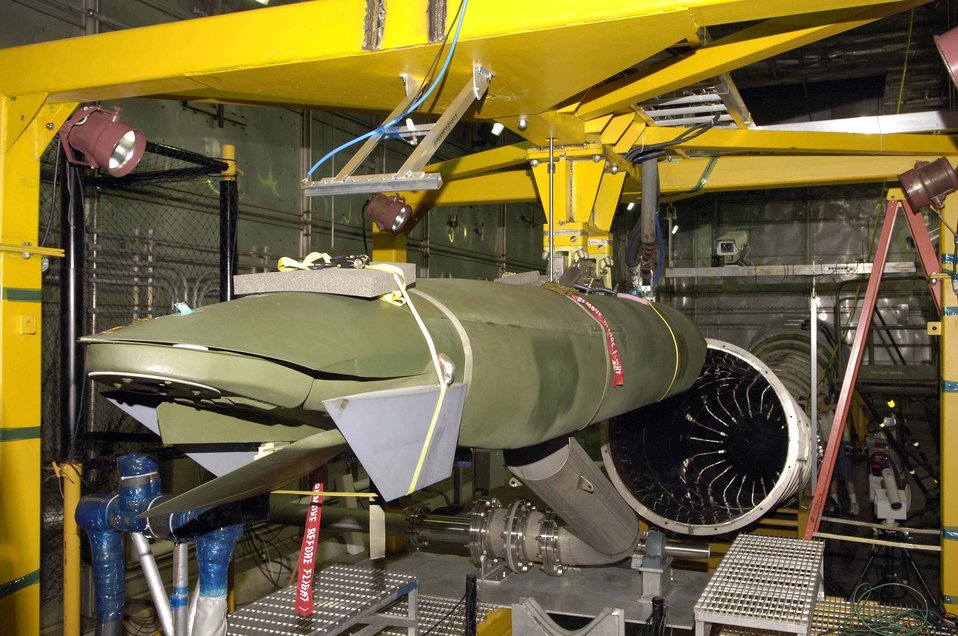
Climatic lab plays crucial role in missile tests

An AGM-129 Advanced Cruise Missile is tested in the McKinley Climatic Laboratory Sept. 4 at Eglin Air Force Base, Fla. The missile is designed to evade air- and ground-based defenses in order to strike heavily defended, hardened targets.